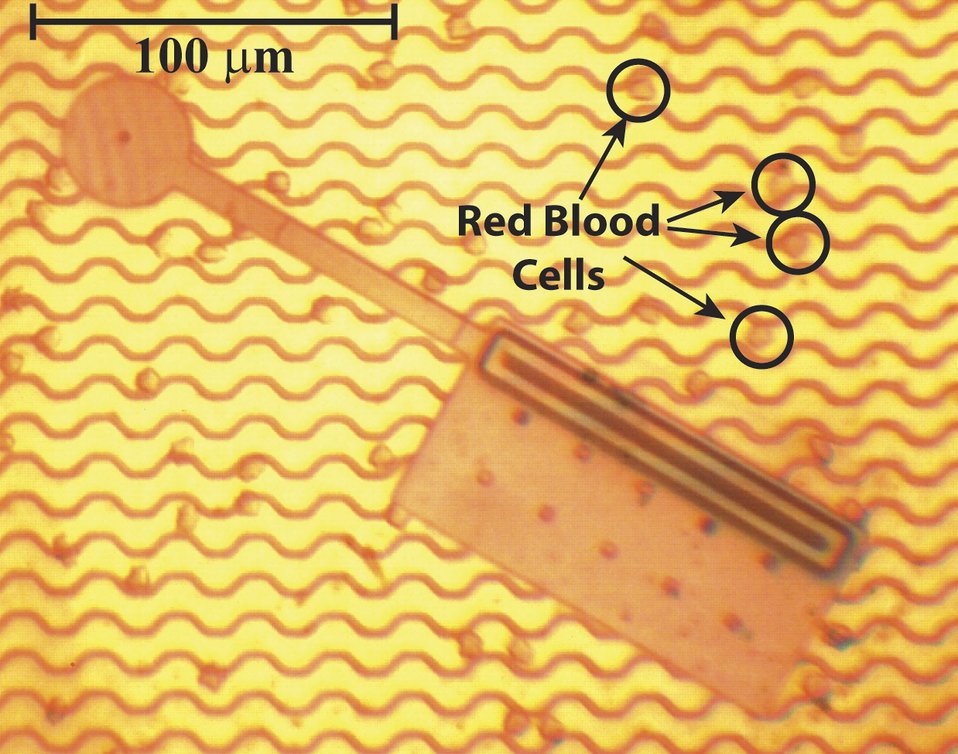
Nanosoccer Robots

A photograph of a typical nanosoccer robot compared in size to red blood cells. About 200 of these robots could stretch in a line across the top of a plain M&M® candy.